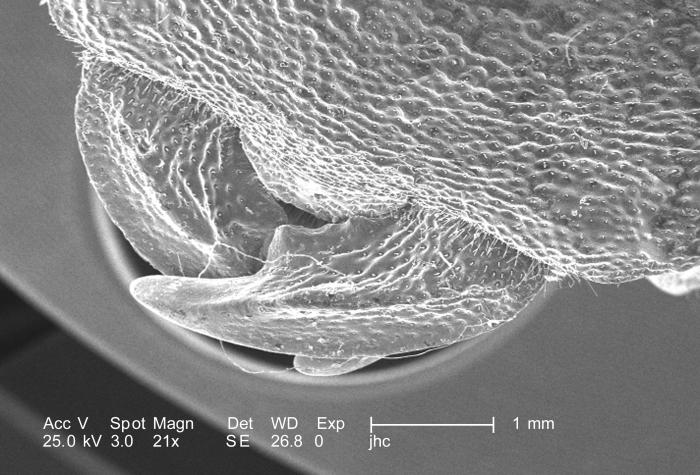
At a low magnification of 21X, this scanning electron micrograph (SEM) focused on the head region of an adult 'figeater' beetle, Cotinis mutabilis. Note the insect's two overlapping mandibles. For successively greater magnifications of this region with its exoskeletal features PHIL 9953, 9955, 9956, 9957 and 9958.